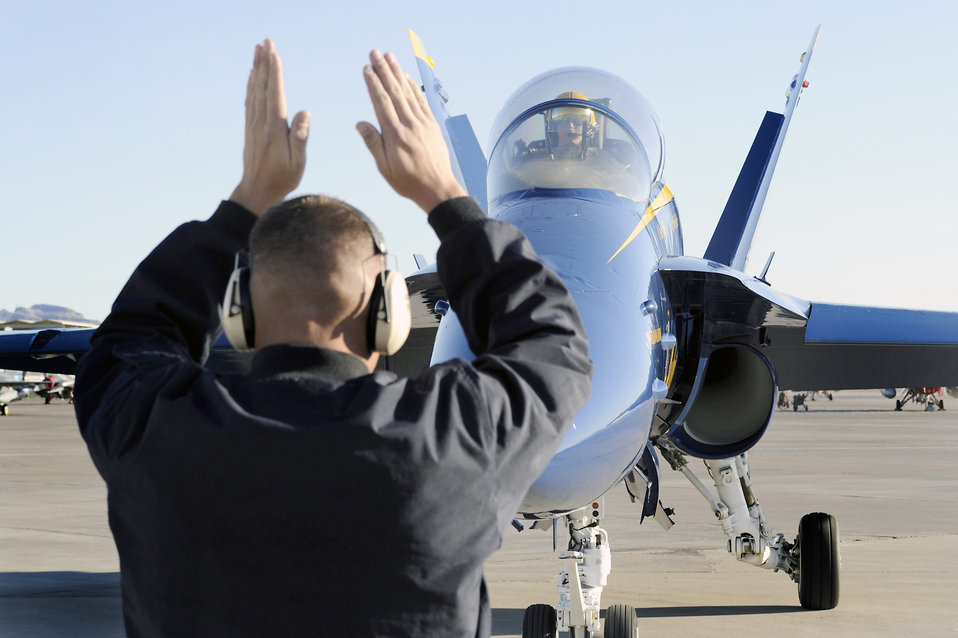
Thunderbirds fly the Blue Angels

Staff Sgt. Brian Emerson marshals in Navy Blue Angels #5, Lt. Ben Walborn, and #4, Rob Kurrle, as they arrive Feb. 23, 2011, at Nellis Air Force Base, Nev.